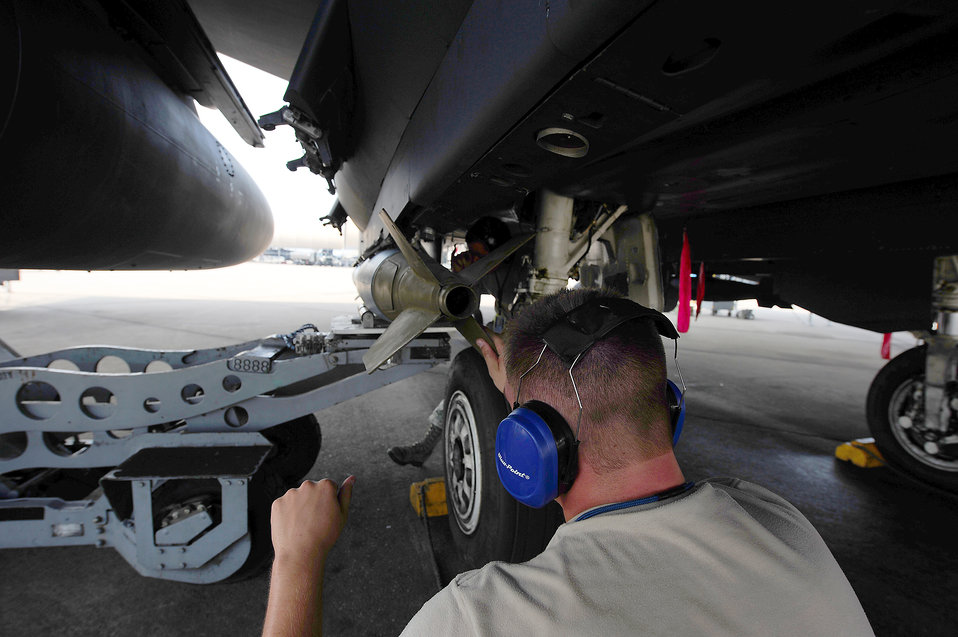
Arming the eagle

Staff Sgt. Tim Smith helps load an inert BDU-50 onto an F-15E Strike Eagle July 20, 2011, during a phase II operational readiness exercise at Bagram Airfield, Afghanistan. Sergeant Smith is a team chief assigned to the 336th Aircraft Maintenance Squadron.